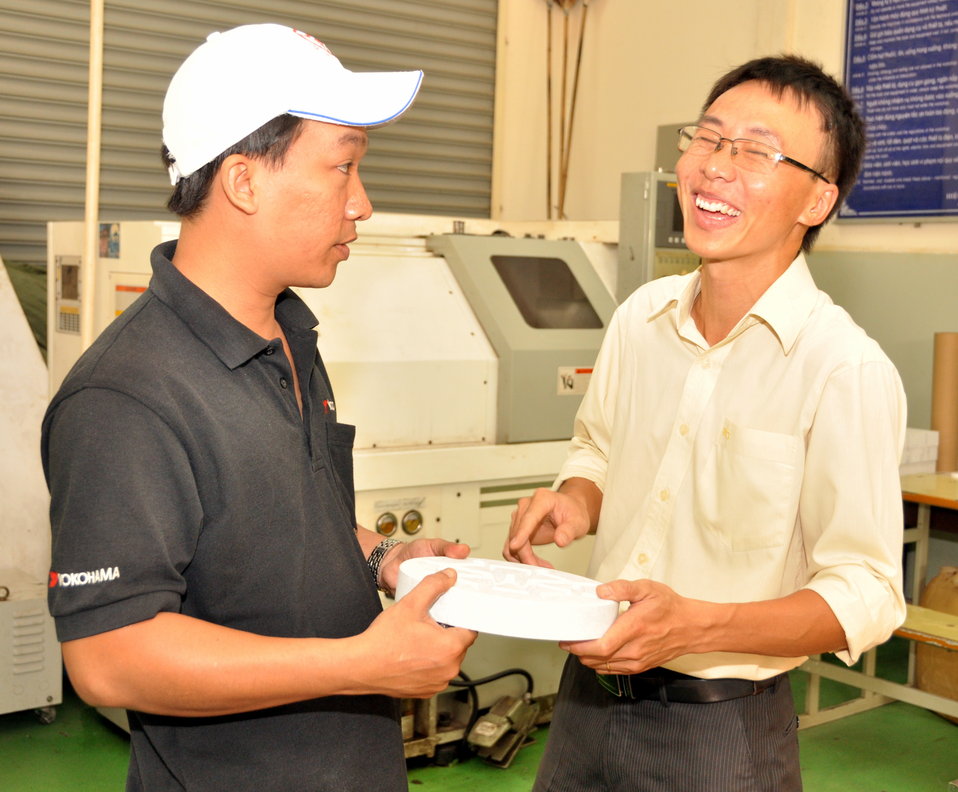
Ho Chi Minh Vocational College of Technology

Vu The Manh, lecturer of Mechanical Engineering Faculty at the Ho Chi Minh Vocational College of Technology

Photo: January 11, 2013, Richard Nyberg @USAIDVietnam